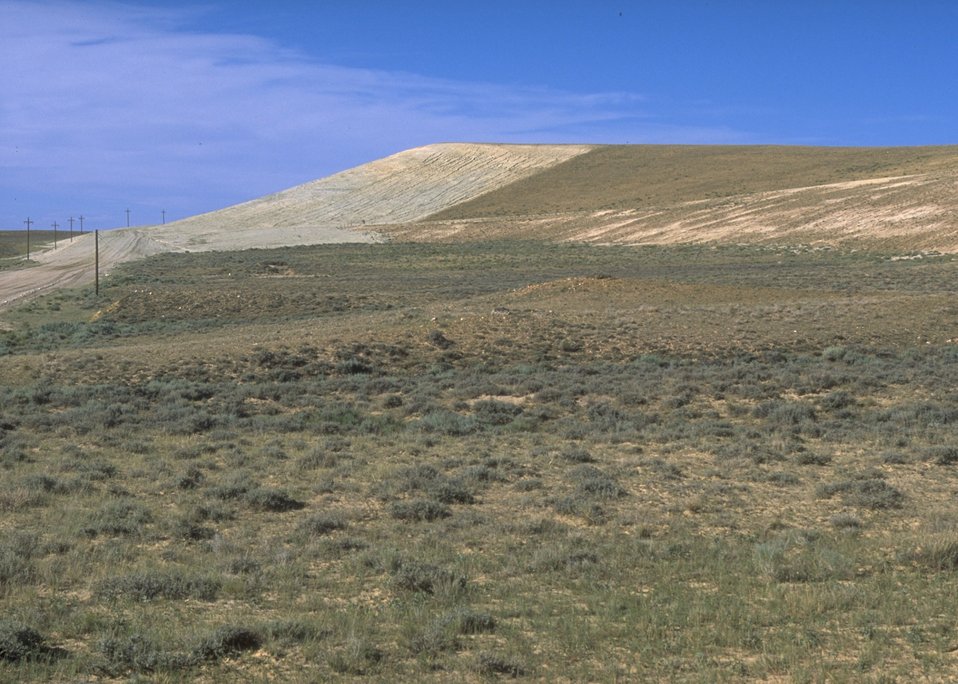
Gas Hill Abandoned Mine Lands in various stages of rehabilitation, Lander Field Office.